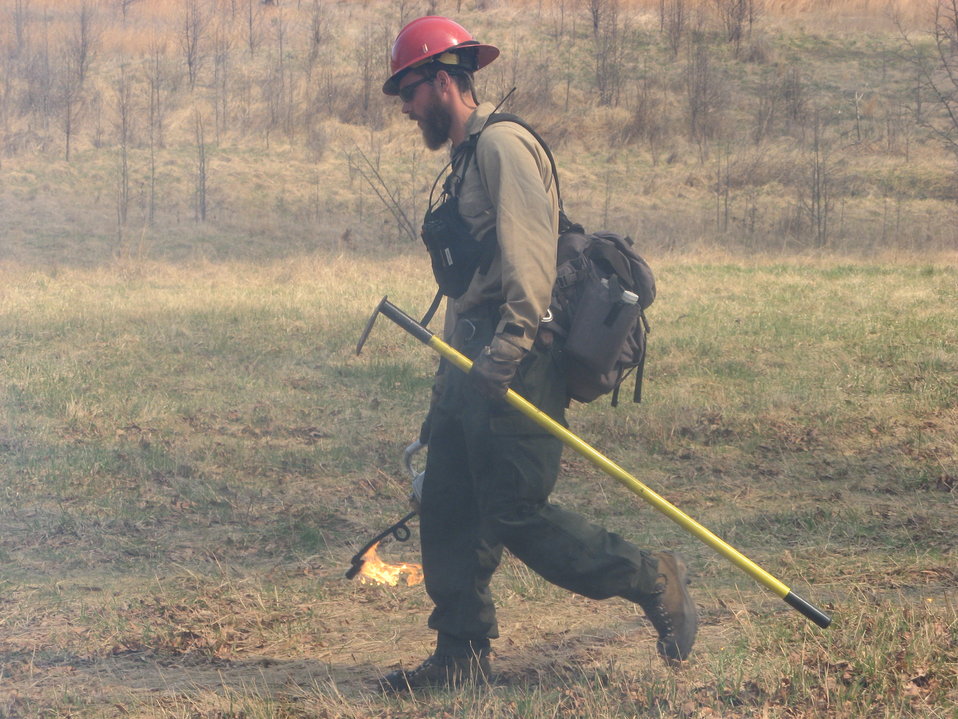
Firefighter with drip torch and hand tool

Laurel, MD: A wildland firefighter carries a drip torch and a hand tool at a controlled burn at Patuxent National Research Refuge.